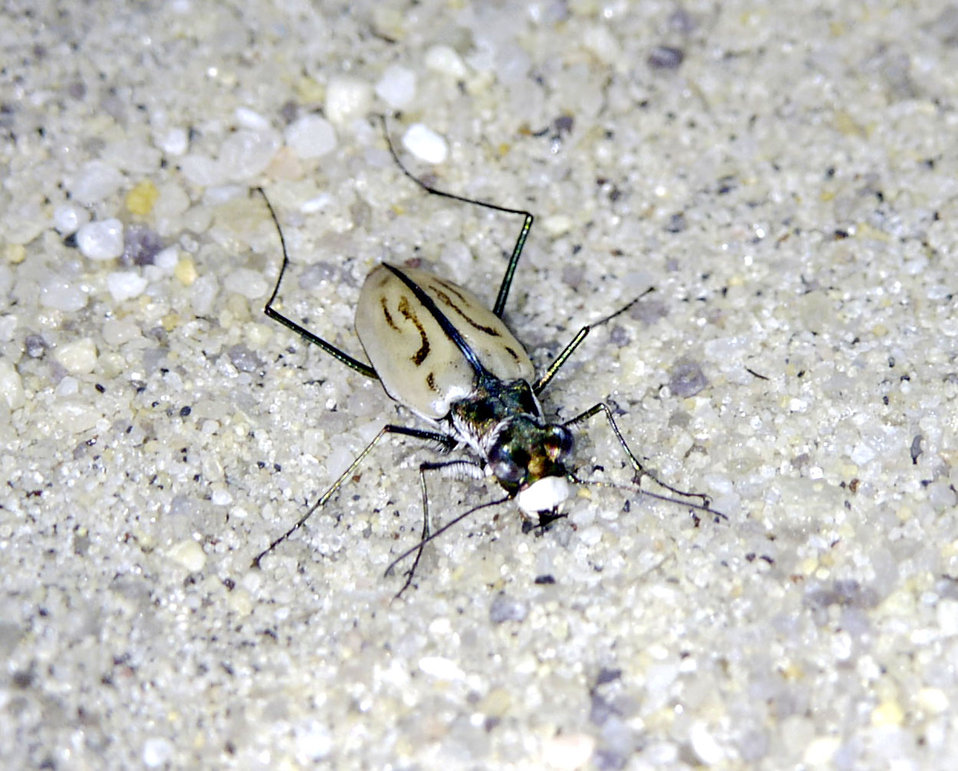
Northeastern beach tiger beetle observed in Virginia.